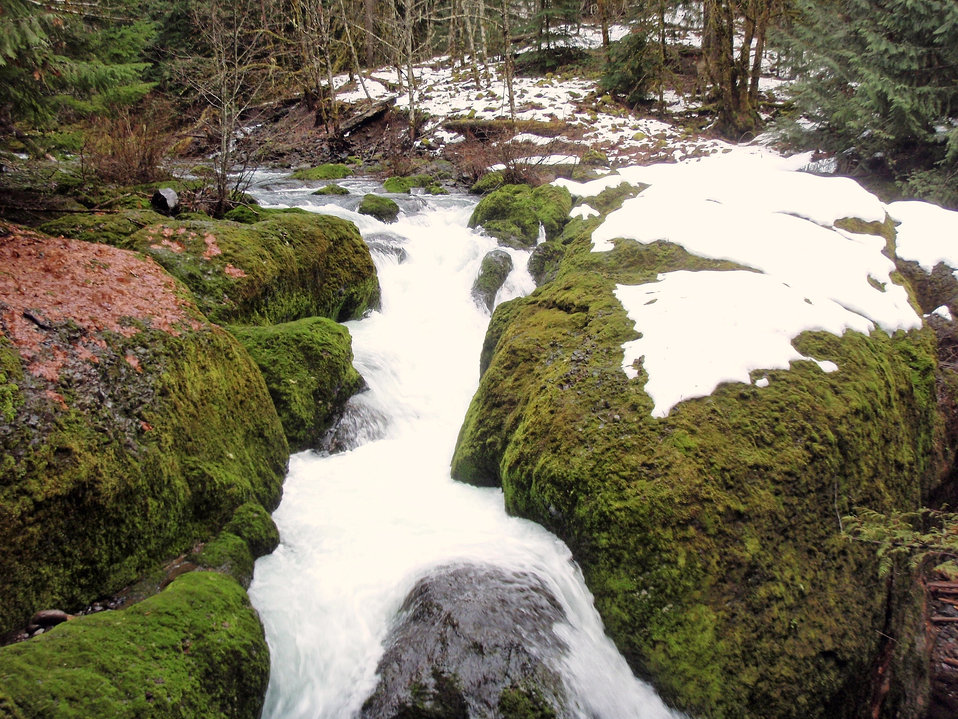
Oak Grove Fork Fish Return flow

Flows like this now mimic a natural river system throughout the seasons of the year on Feb. 5, 2013. This water release expands habitat for fish but also could mean great things to the entire ecosystem..